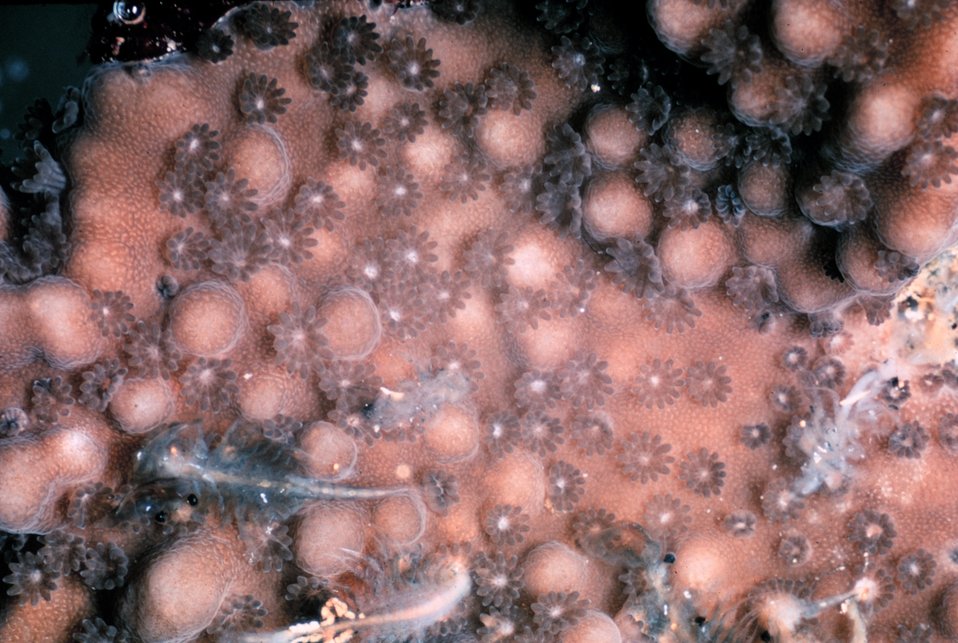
Coral polyps